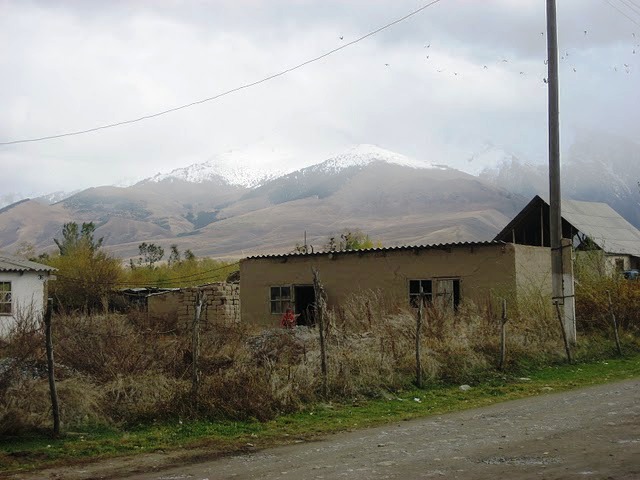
U.S. Embassy Bishkek Officers Travel Kyrgyzstan To Observe Elections

Foreign Service Officers from U.S. Embassy Bishkek travel Kyrgyzstan to observe polling stations and monitor the political and security situation in Kyrgyzstan in October 2010.